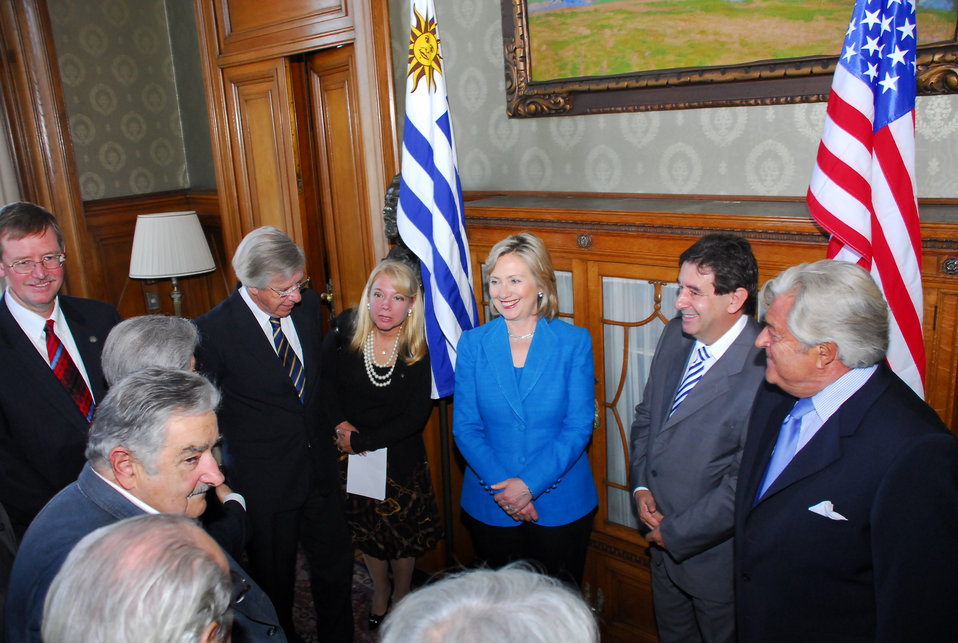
Secretary Clinton Meets With Uruguay President-elect Jose Mujica

U.S. Secretary of State Hillary Rodham Clinton meets with Uruguay President-elect Jose Mujica and opposition leaders, Montevideo, Uruguay March 1, 2010.